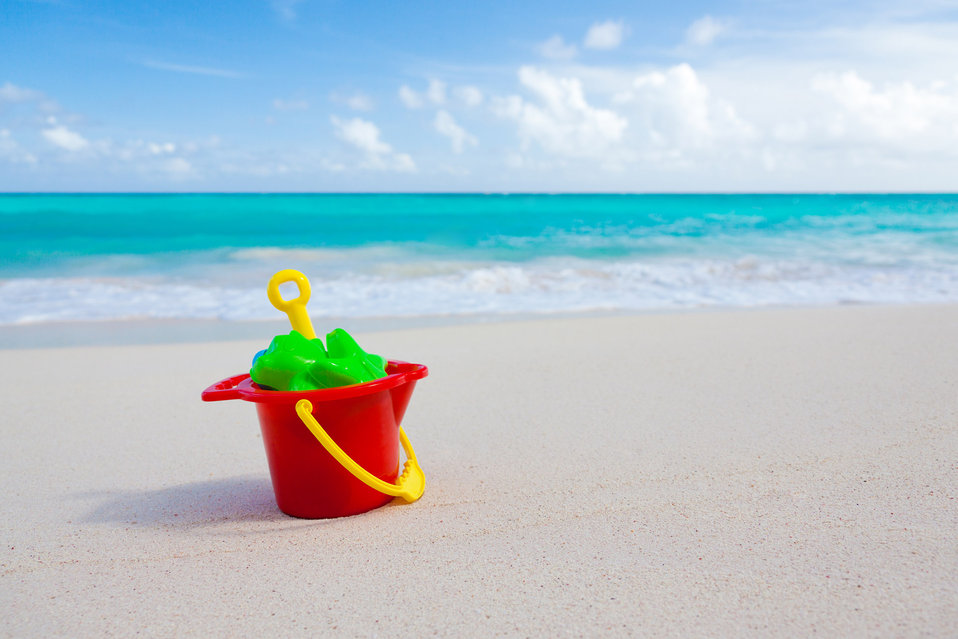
Bucket and toys on beach

Colorful bucket and other sand toys on beach with the sea in the background.